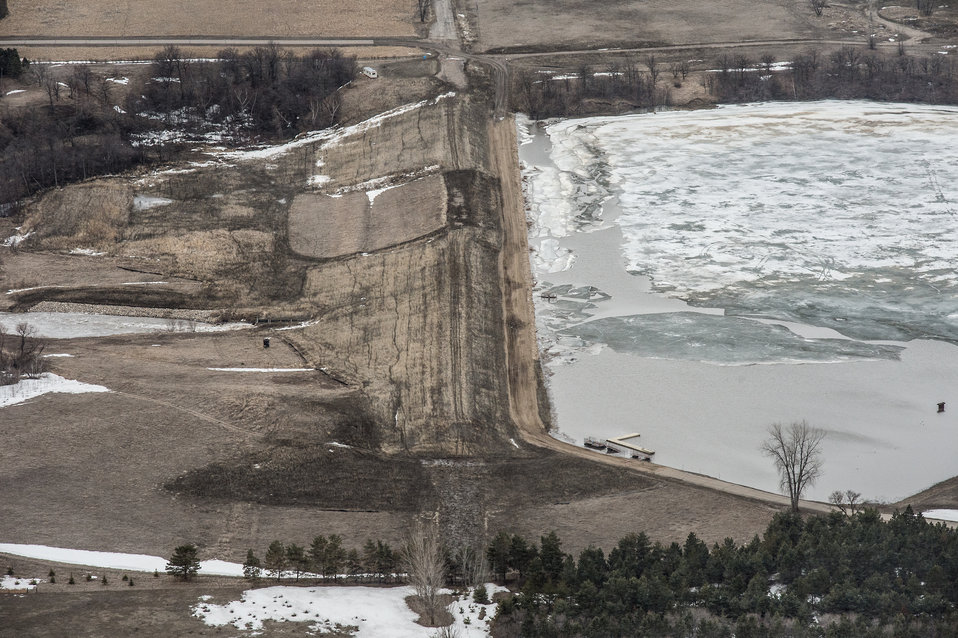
Renwick Dam, in Pembina County, ND, part of the Red River basin, on Wednesday, May 1, 2013. For information about this and other programs from the USDA Red River Basin Initiative (RRBI) please see www.mn.nrcs.usda.gov/news/features13/RRBI.html.